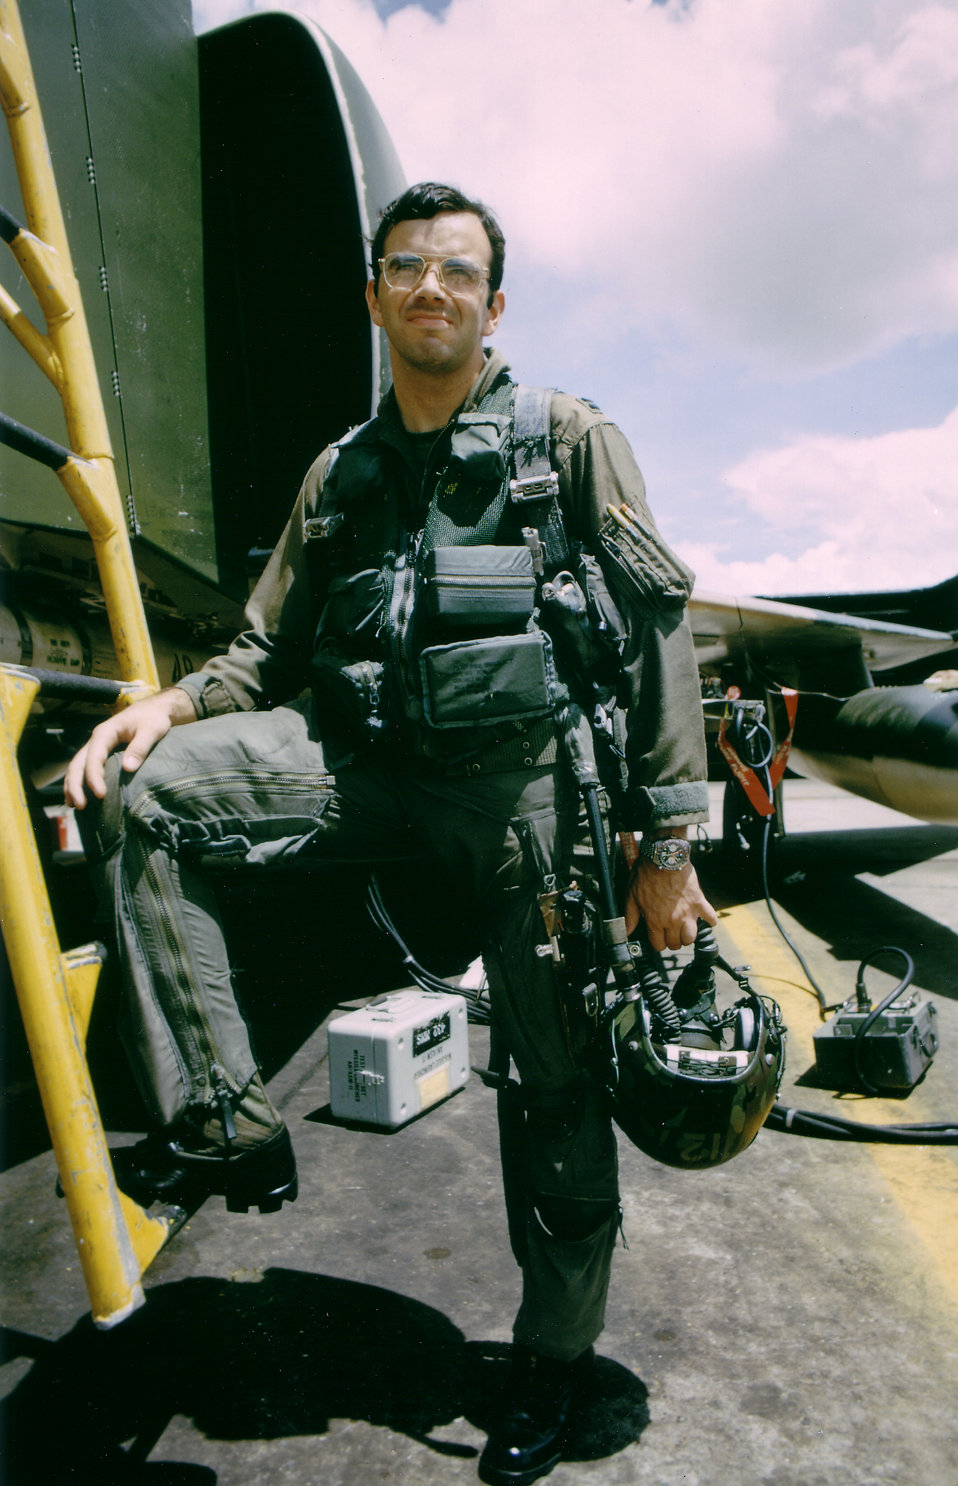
Capt. Jeffrey Feinstein

1970's -- UDORN AIR BASE, Thailand, September 1972 -- U.S. Air Force ace, Capt. Jeffrey Feinstein, 13th Tactical Fighter Squadron, poses beside his F-4 aircraft.